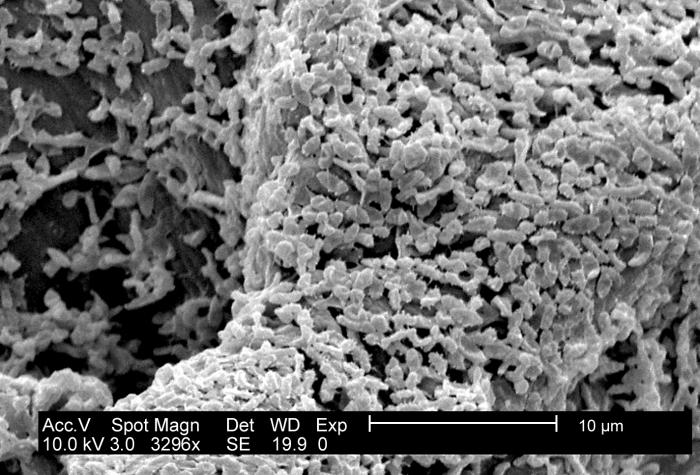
This SEM depicts a P. mirabilis (ATCC 29906) biofilm growing on PC (polycarbonate) coupons using a CDC biofilm reactor.